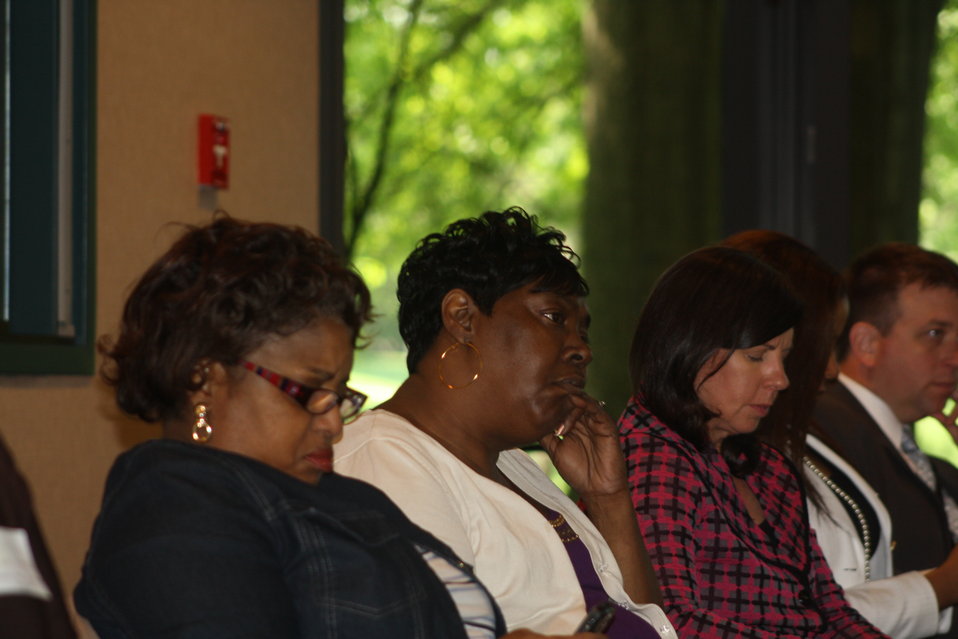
Faith-Based and Neighborhood Partnership launch at Atlanta's Carter Center